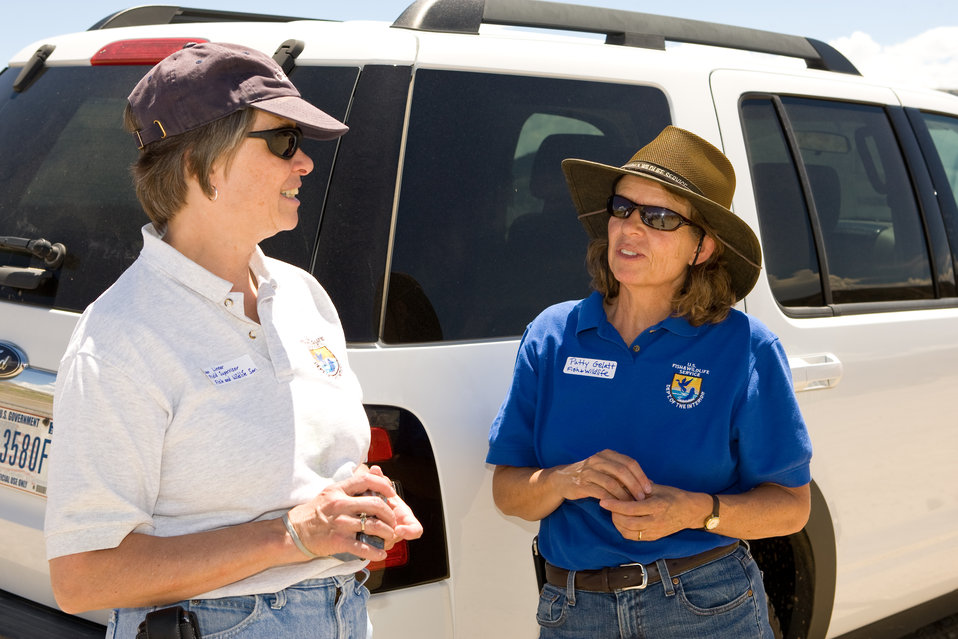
Colorado Rare Plant Conservation Initiative

The Colorado Rare Plant Conservation Initiative (RPCI) is a partnership of 23 statewide and regional agencies, private organizations, and academic institutions working to conserve 121 rare plants in Colorado. As part of these efforts the group developed the Colorado Rare Plant Conservation Strategy, developed Best Management Practices to reduce energy development impacts, addressed climate change, and developed focused strategies for the conservation of individual species at eight priority landscapes. The group has also worked to coordinate volunteer efforts for plant conservation across the state.